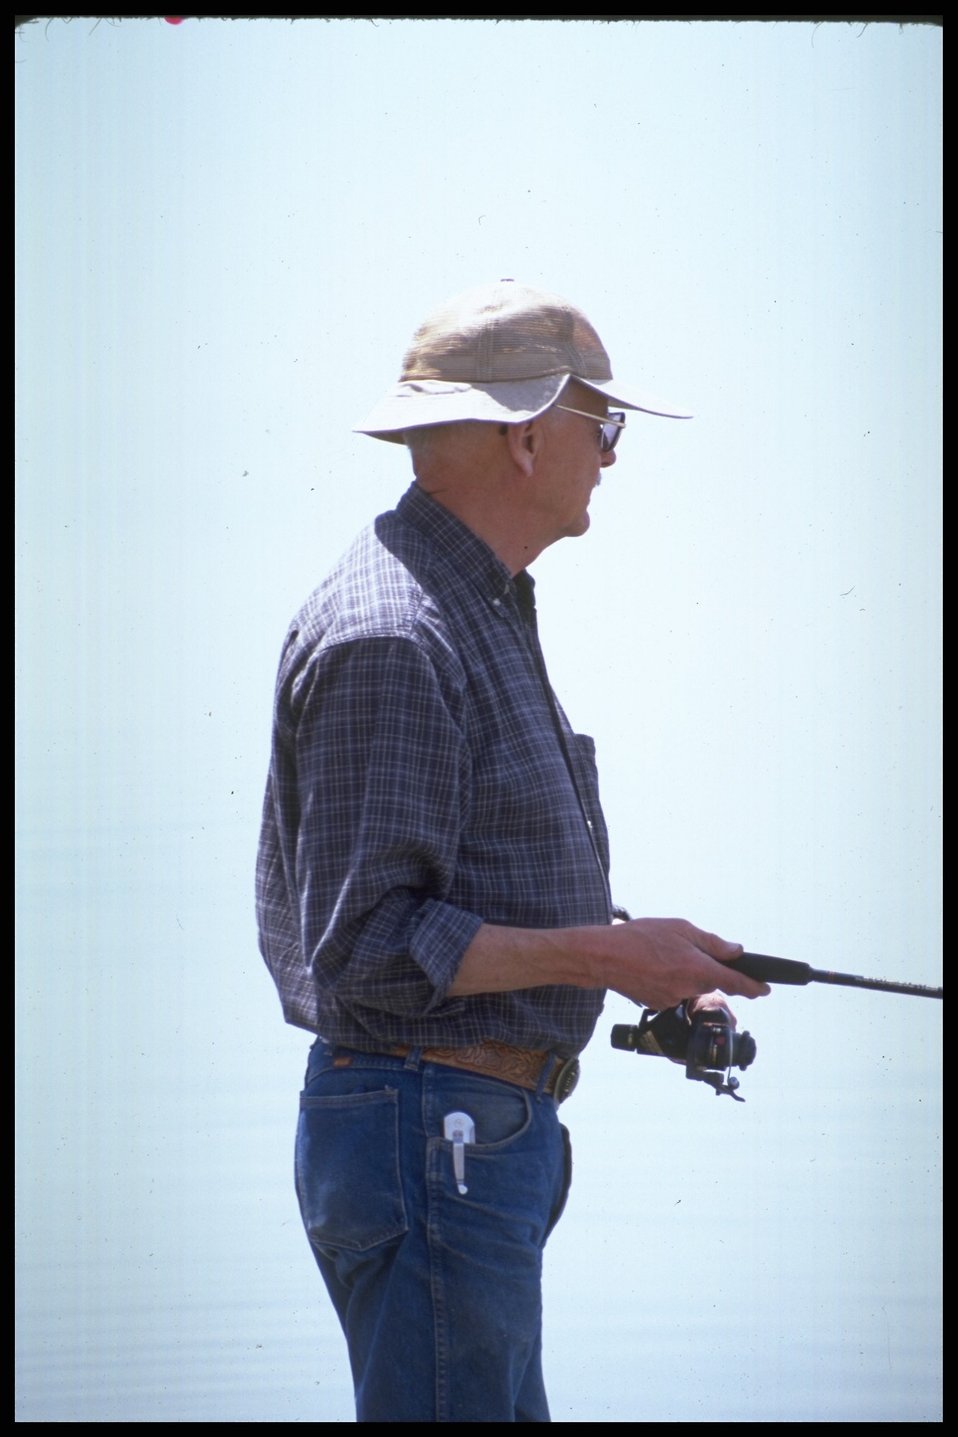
Tourist/fisherman at Warner Wet Lands, Lakeview District.